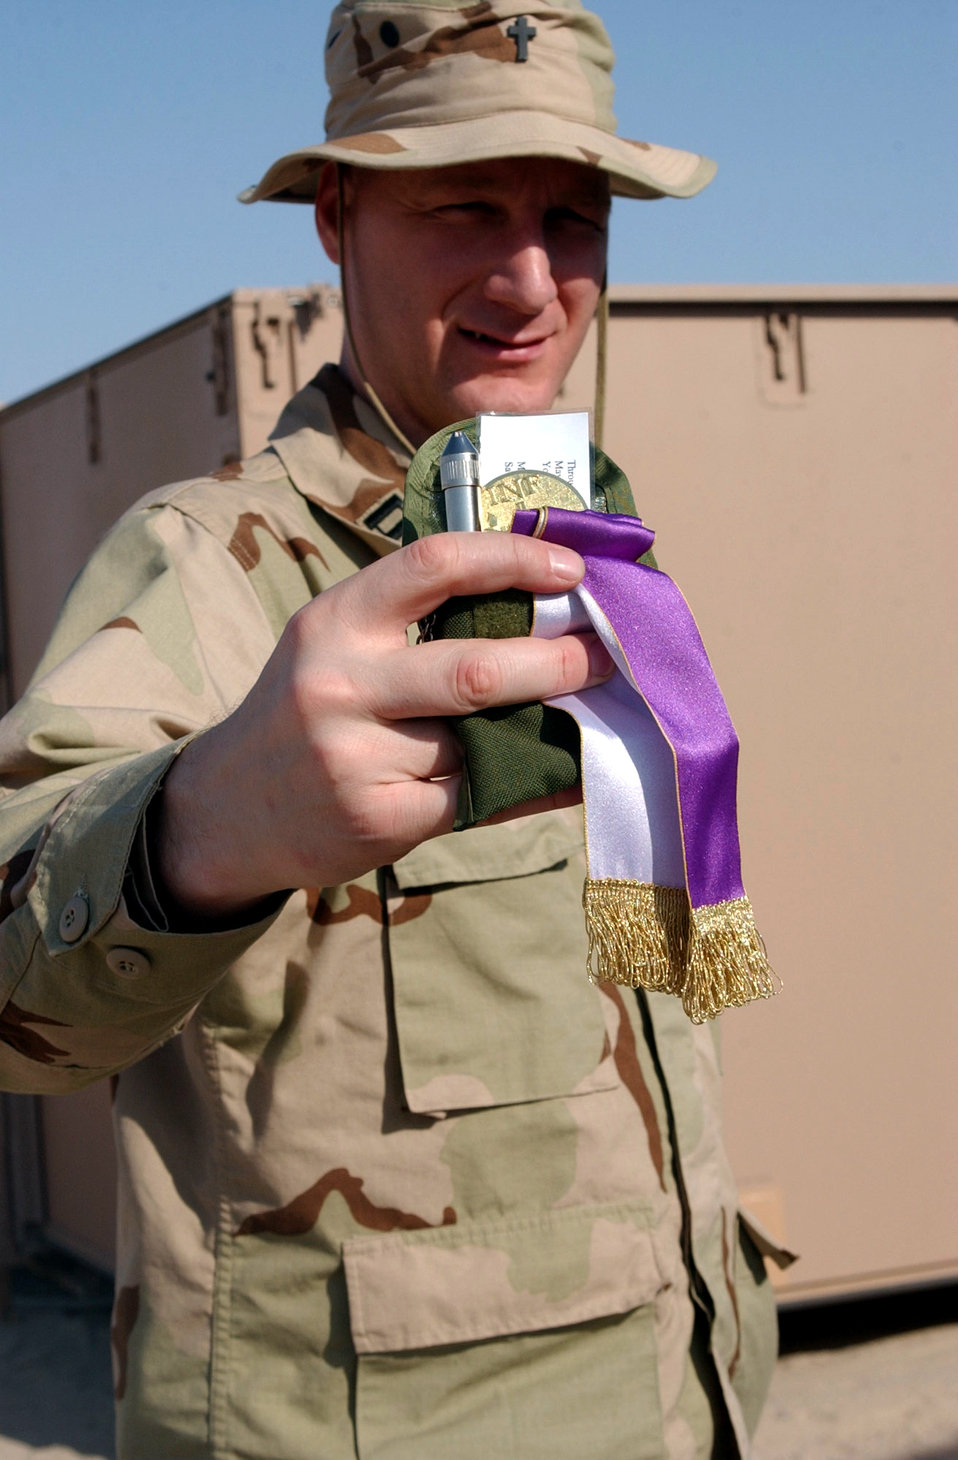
Theisen

TALLIL AIR BASE, Iraq -- Chaplain (Capt.) Eugene Theisen holds the tools of his trade. As a Catholic priest and member of the 407th Air Expeditionary Group chapel staff, Theisen carries with him at all times a vial of holy water for blessings, a stole for hearing confessions and holy oil for anointing the sick, hurt or injured. He is deployed as part of the 332nd Air Expeditionary Wing supporting Operation Iraqi Freedom.